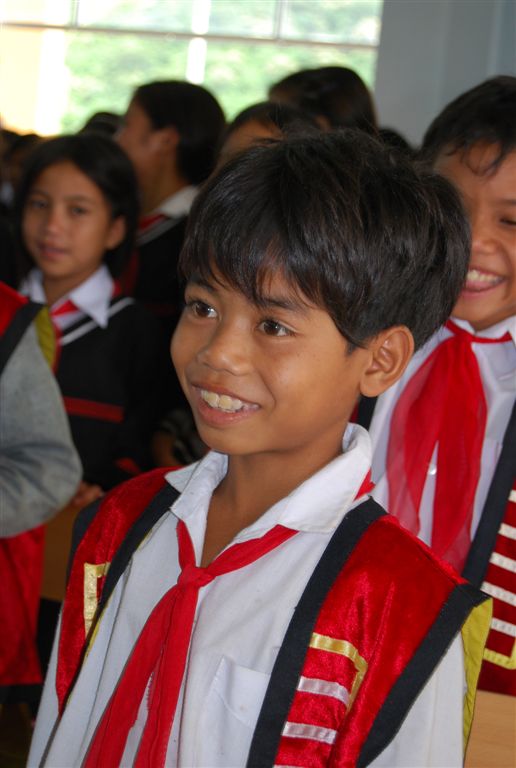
Students enjoy their new school